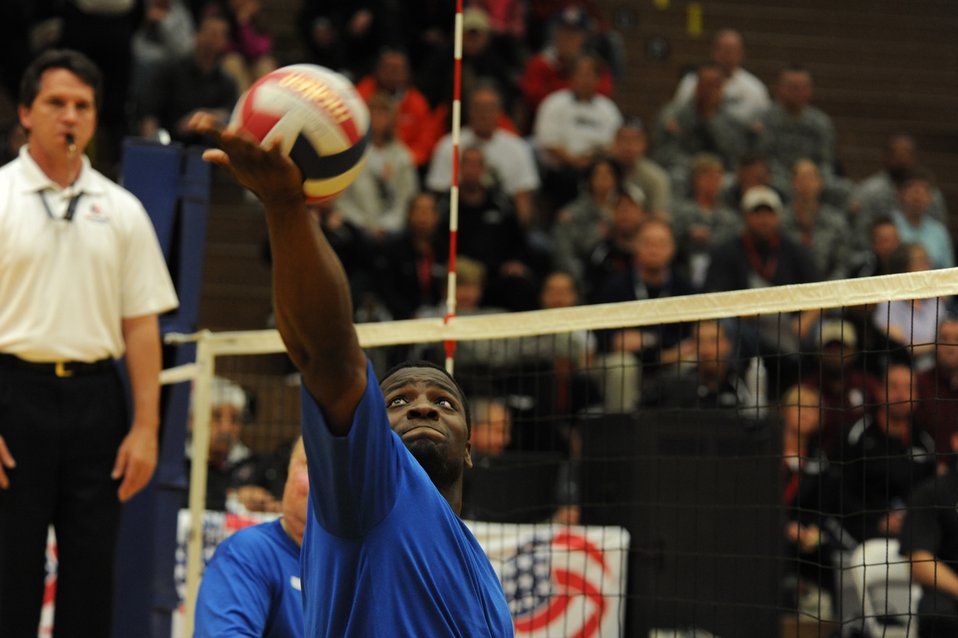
AF Volleyball wins Bronze at Warrior Games

Air Force Warrior Games athlete, Matt Sanders, blocks the ball during the Warrior Games sitting volleyball match against Army at the U.S. Olympic Training Center in Colorado Springs, Colo., May 13, 2010.